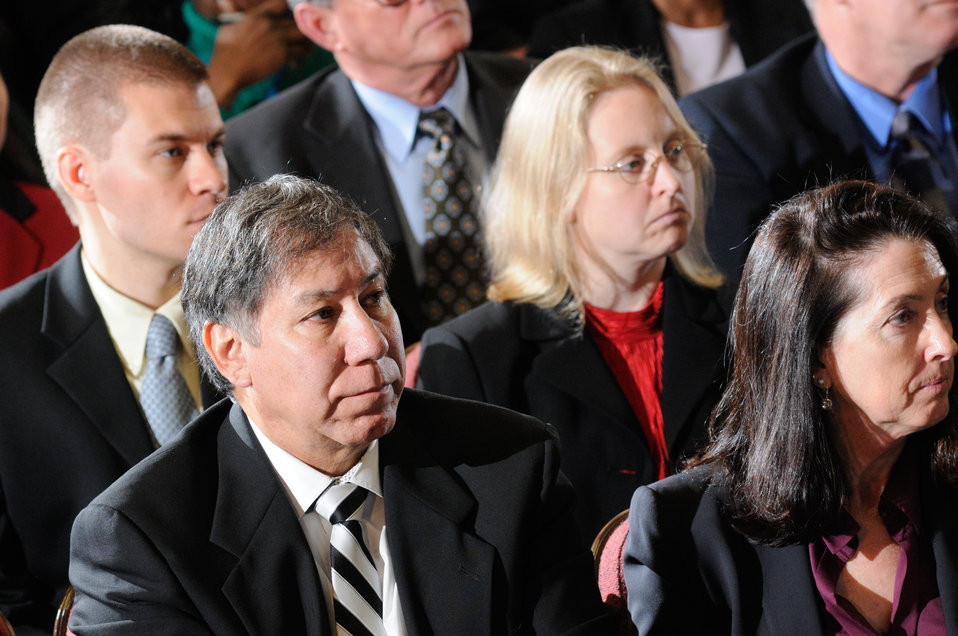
U.S. Department of Agriculture (USDA) (front L - R) Under Secretary for Marketing and Regulatory Programs Ed Avalos and Forest Service Associate Chief Mary Wagner, and award recipients (back L - R) Agricultural Research Service (ARS) Research Entomologist Matthew L. Richardson and ARS Animal Scientist Kim McMunn and others listen to Professor of Law, Columbia University of Law, U.S. Department of Agriculture (USDA) (front L - R) Under Secretary for Marketing and Regulatory Programs Ed Avalos and Forest Service Associate Chief Mary Wagner, and award recipients (back L - R) Agricultural Research Service (ARS) Research Entomologist Matthew L. Richardson and ARS Animal Scientist Kim McMunn and others listen to Columbia University of Law Theodore Shaw speak during the U.S. Department of Agriculture (USDA) Dr. Martin Luther King, Jr. National Service Day presentation of the Drum Major for Service Awards at the USDA Jefferson Auditorium on Tuesday, Jan. 15, 2013. USDA photo by Lance Cheung.Theodore Shaw speak during the U.S. Department of Agriculture (USDA) Dr. Martin Luther King, Jr. National Service Day presentation of the Drum Major for Service Awards at the USDA Jefferson Auditorium on Tuesday, Jan. 15, 2013.